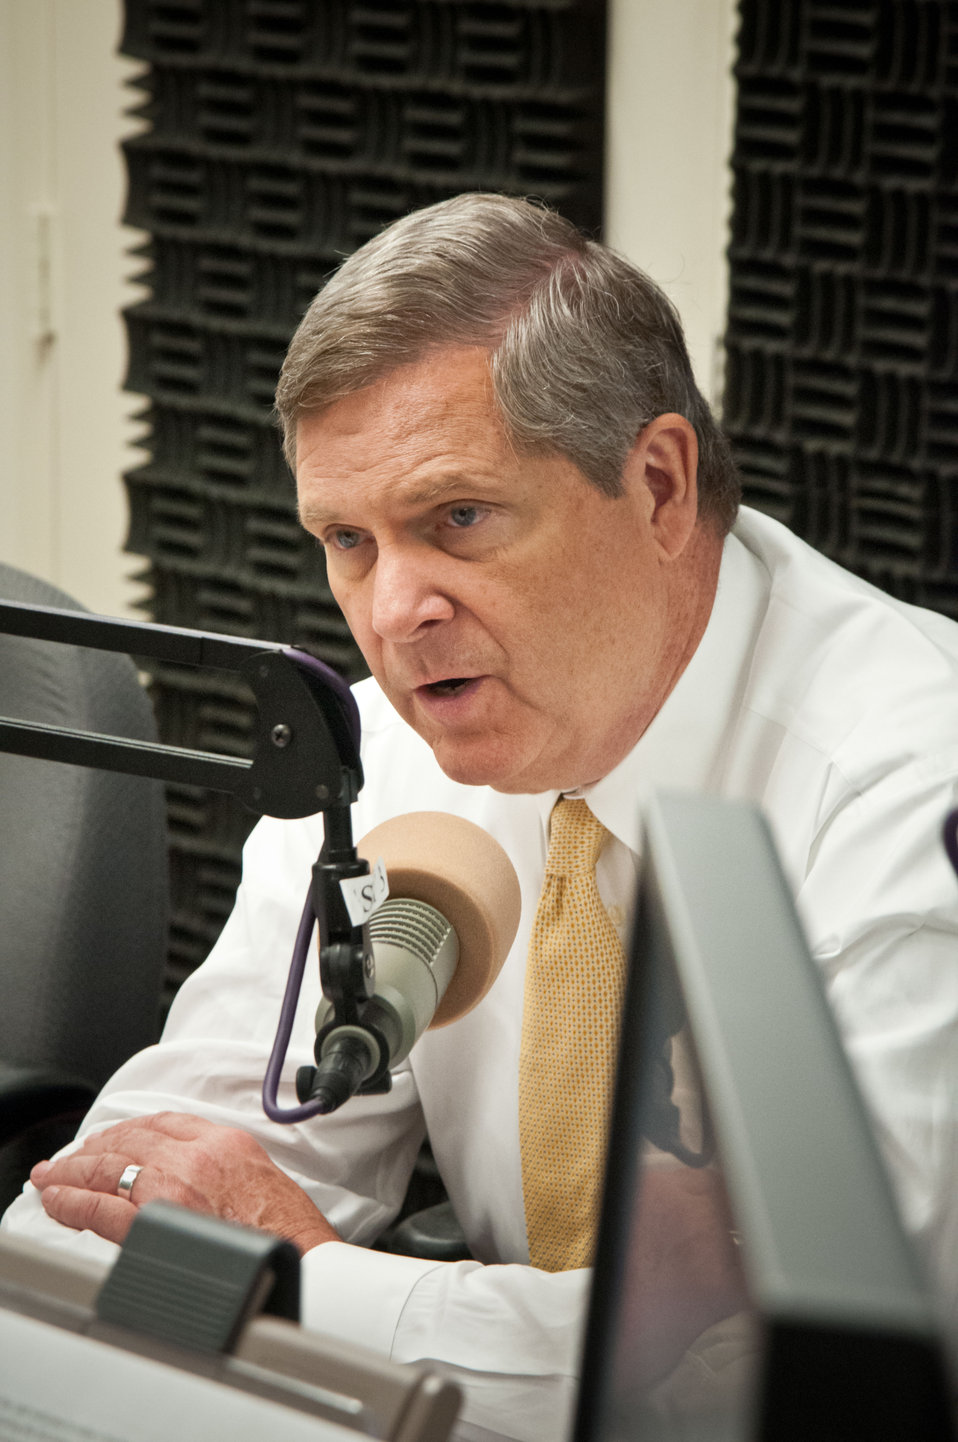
Agriculture Secretary Tom Vilsack discusses the upcoming fire season during a media conference at the United States Department of Agriculture in Washington, D.C., on Thursday, April 26, 2012. Included in the conference call were Interior Secretary Ken Salazar, Forest Service Chief Tom Tidwell and FEMA Administrator William Fugate.